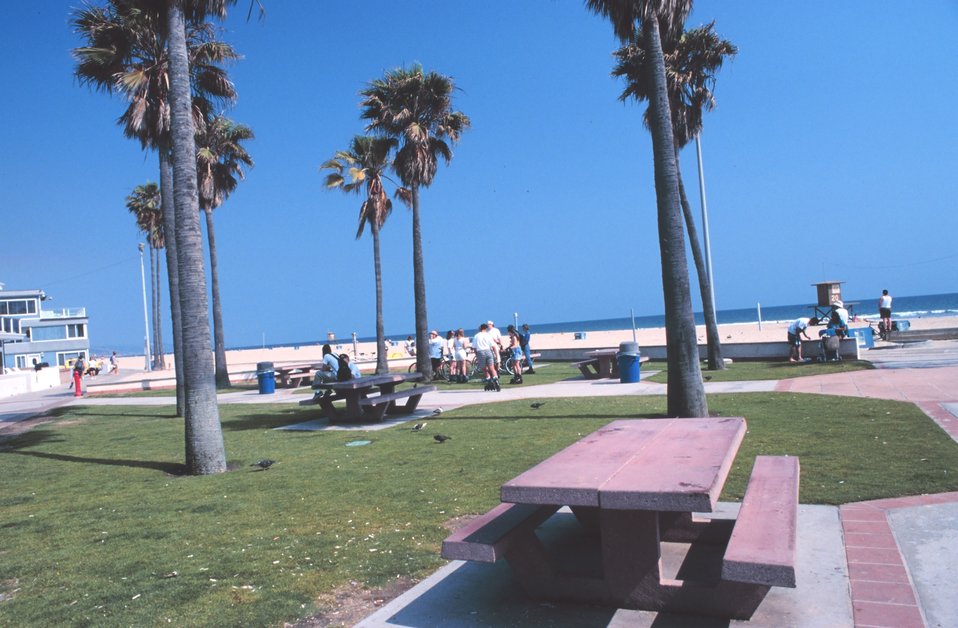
Southern California dreaming - the beach at Newport